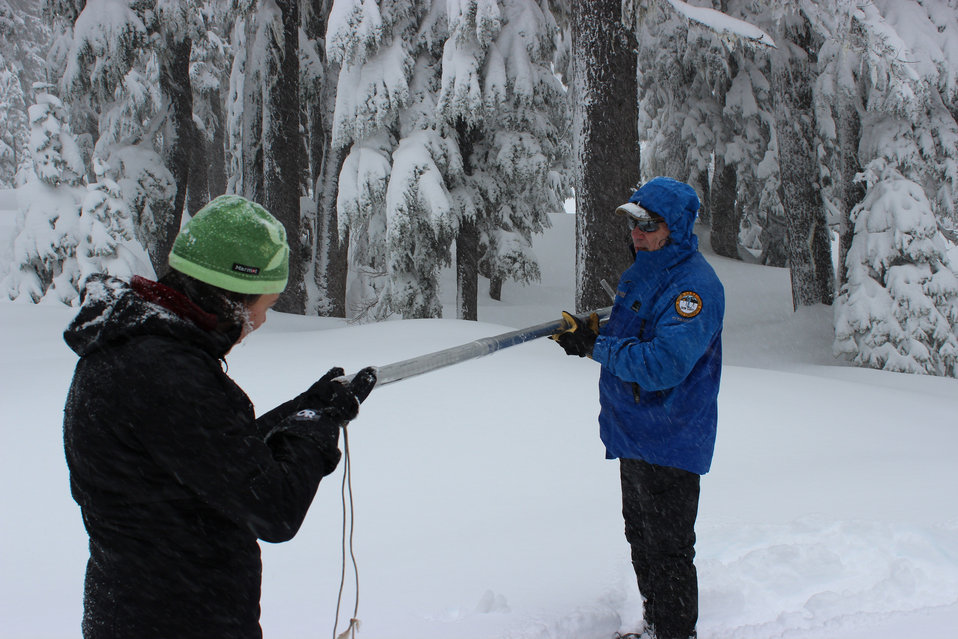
Water Forecast 1

U.S. Department of Agriculture (USDA) Natural Resource Conservation Service (NRCS)hydrologists prepare to measure snowpack.